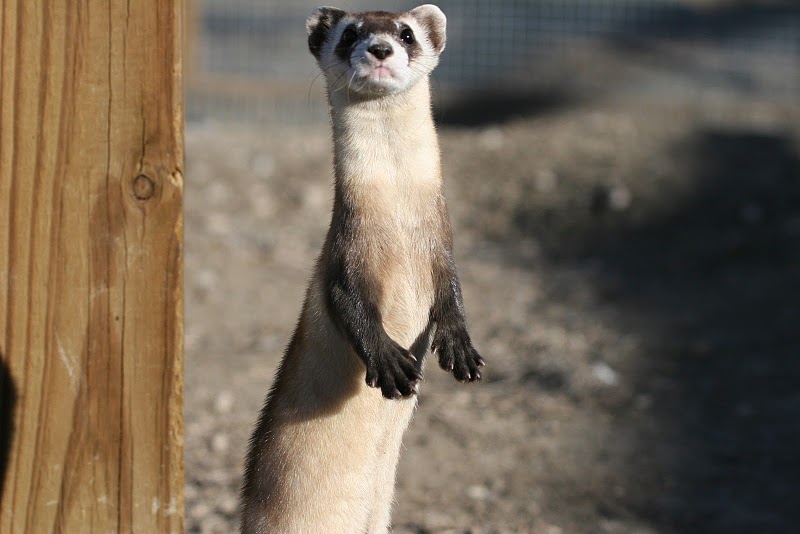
Black-footed Ferret